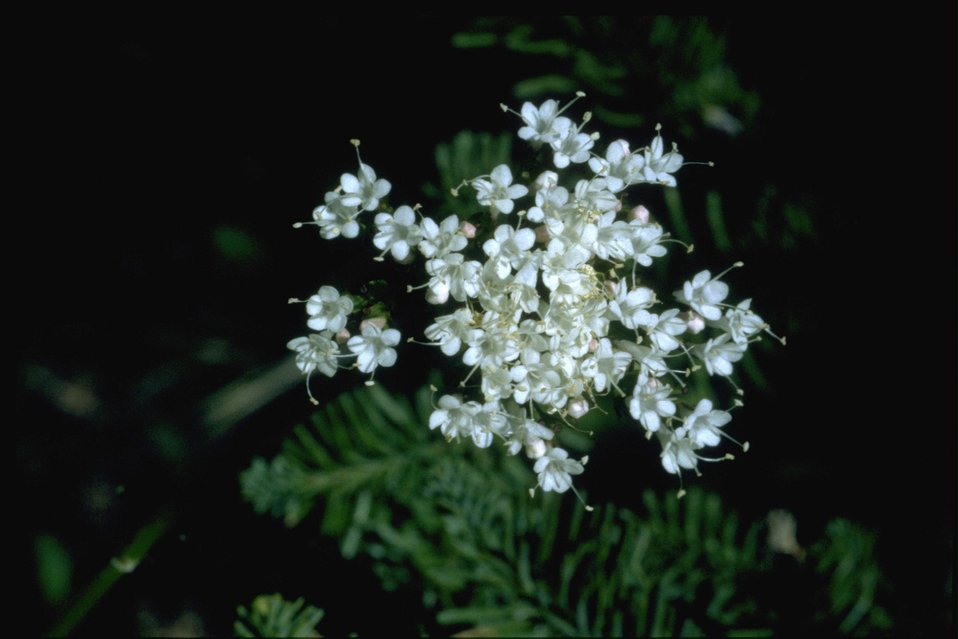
Medium shot of Valeriana sitchensis.